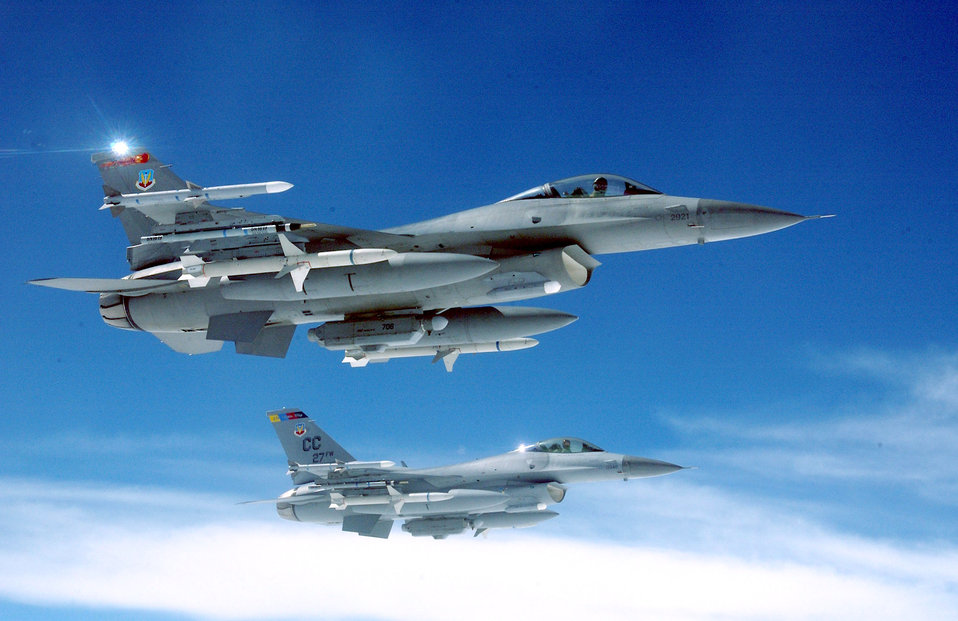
Falcons ruling the skies

OVER NEVADA -- A pair of F-16C Fighting Falcons, assigned to the 27th Fighter Wing at Cannon Air Force Base, N.M., head out for a mission over Nevada's test and training ranges during Red Flag 04-3 here Aug 20. More than 100 aircraft and 2,500 participants are involved in this exercise. Red Flag is a realistic combat training exercise involving the U.S. Air Force and its allies.